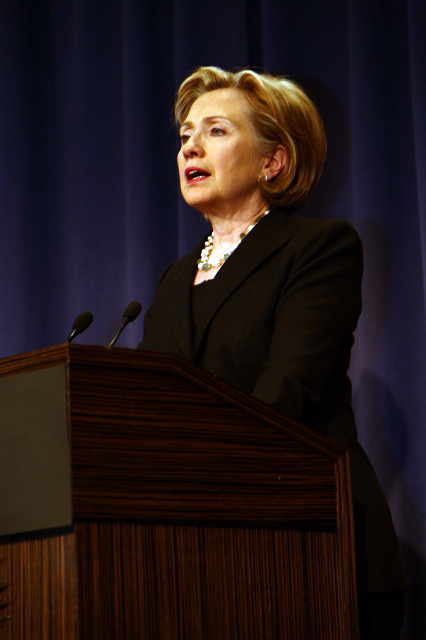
Press Conference With Russian Foreign Minister

Press conference after dinner meeting between U.S. Secretary of State Hillary Rodham Clinton and Russian Foreign Minister Sergey Lavrov in Geneva, Switzerland March 6, 2009.